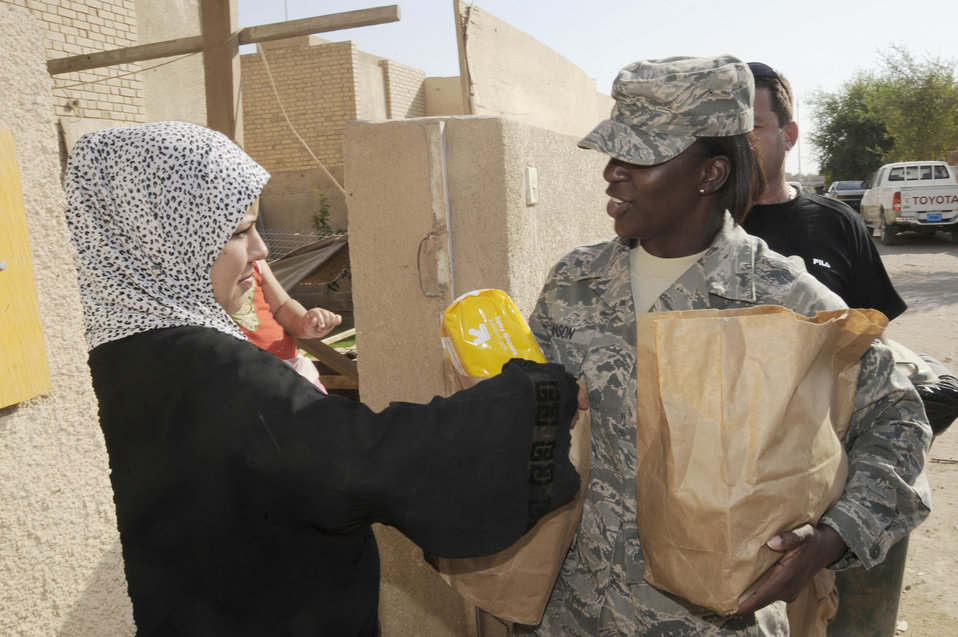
Airmen build ties with Iraqi families

Staff Sgt. Shamonn Mason hands an Iraqi woman donated items for her family July 24 in Baghdad. Forty-five Airmen and Soldiers volunteered to visit and distribute donated items to local Iraqi families as part of the Sather Air Base Good Neighbor Program. Sergeant Mason is a 447th Expeditionary Force Support Squadron deliberate and crisis action planning and execution segments operator. Sergeant Mason is deployed from Randolph Air Force Base, Texas, and is a native of Morganza, La.